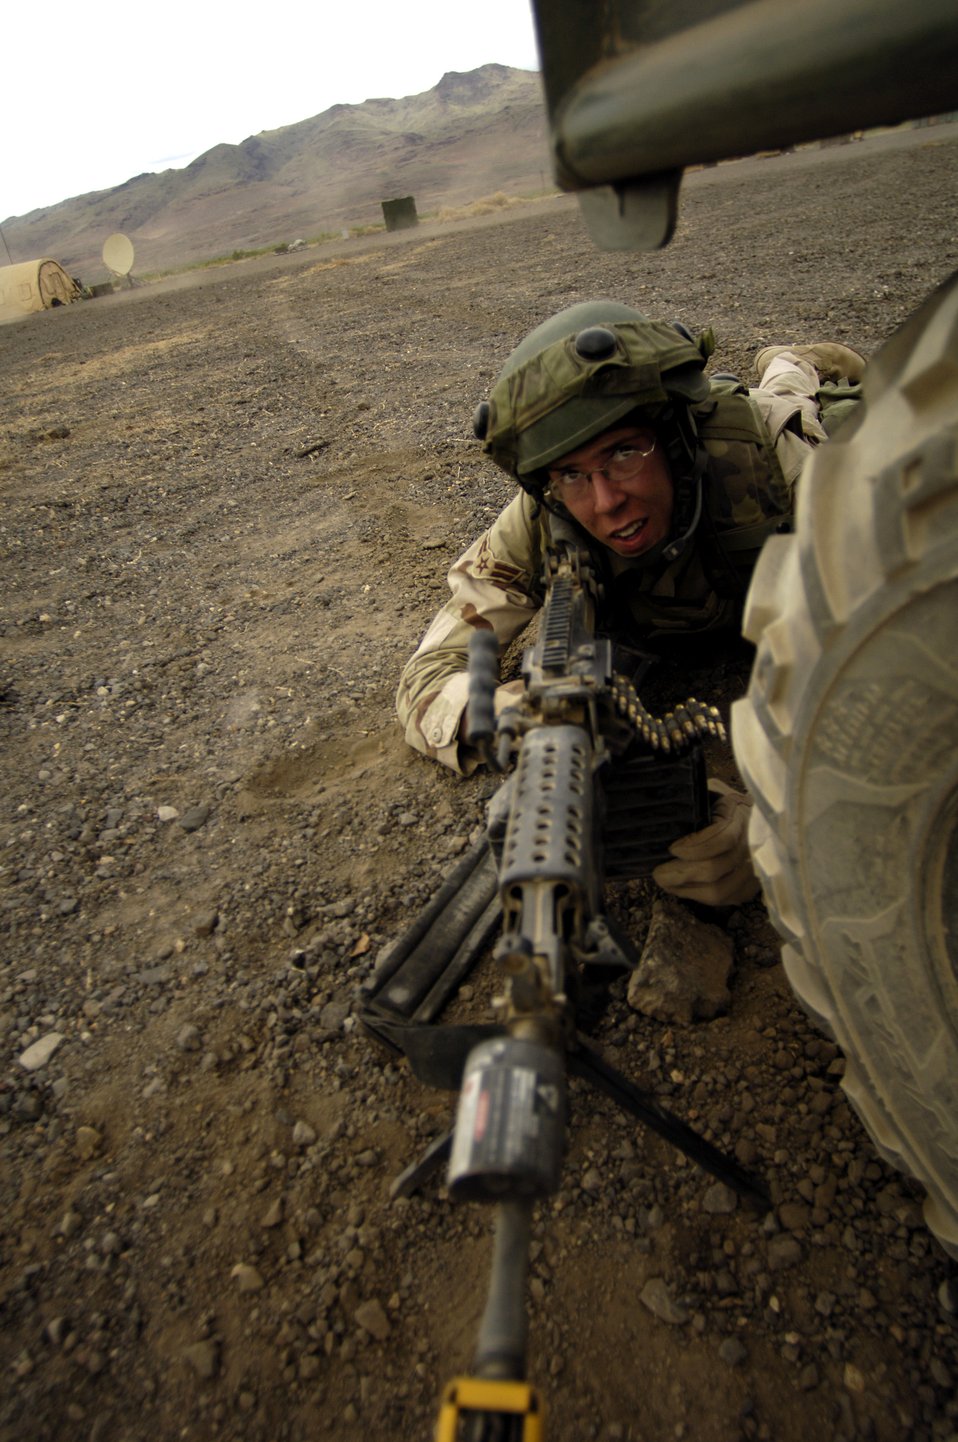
Lightning Fury

A security forces Airman takes cover behind an all-terrain vehicle during a simulated firefight as part of Lightning Fury, an airfield seizure exercise at Amedee Field in Herlong, Calif., on Saturday, May 20, 2006.